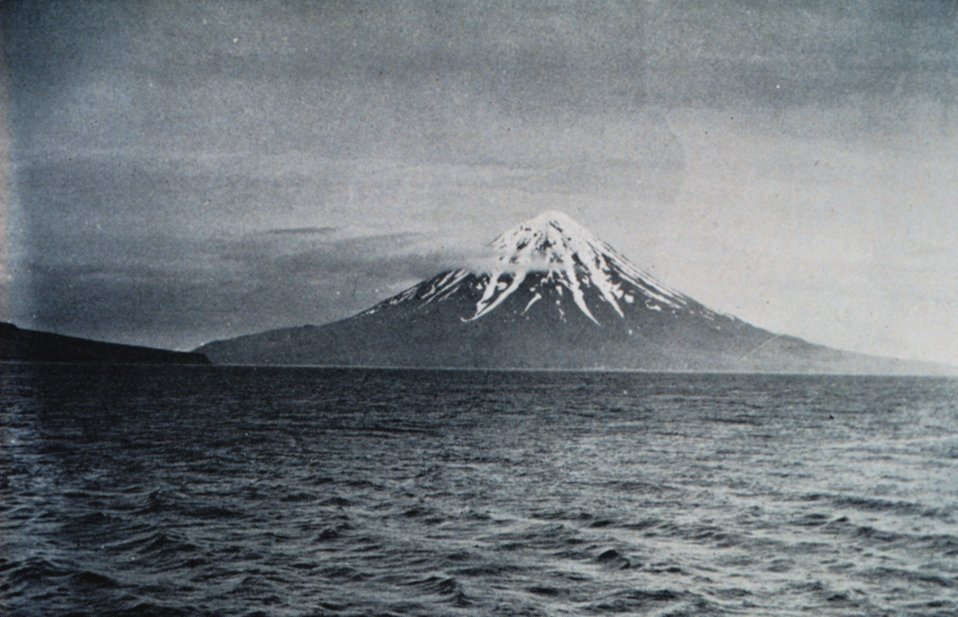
Mt. Carlyle in the Four Mountain Islands